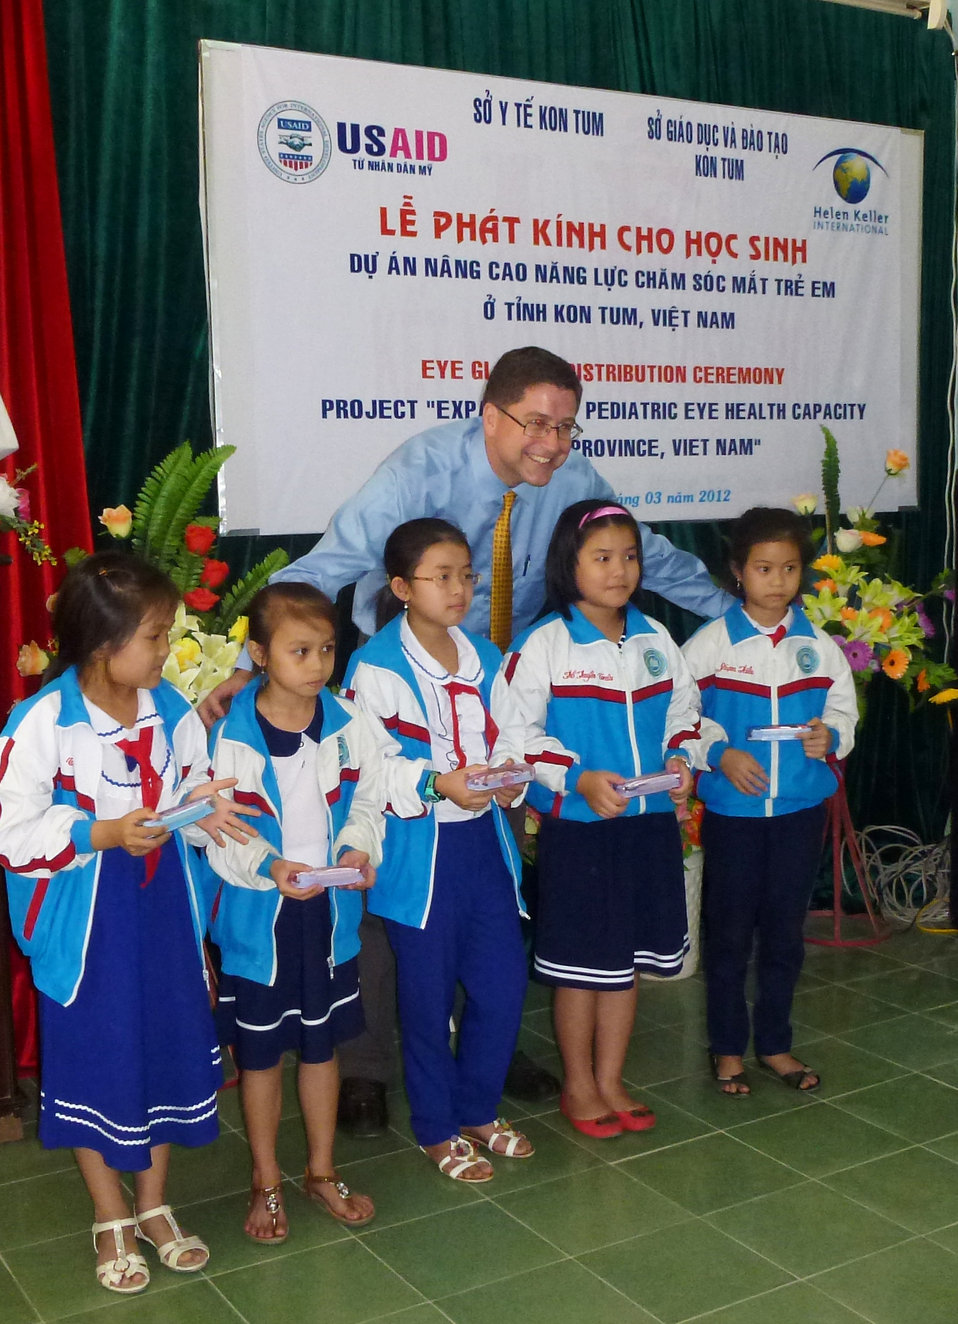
USAID and HKI support refractive error screening examination for students at Phan Dinh Phung Primary School in Kon Tum.